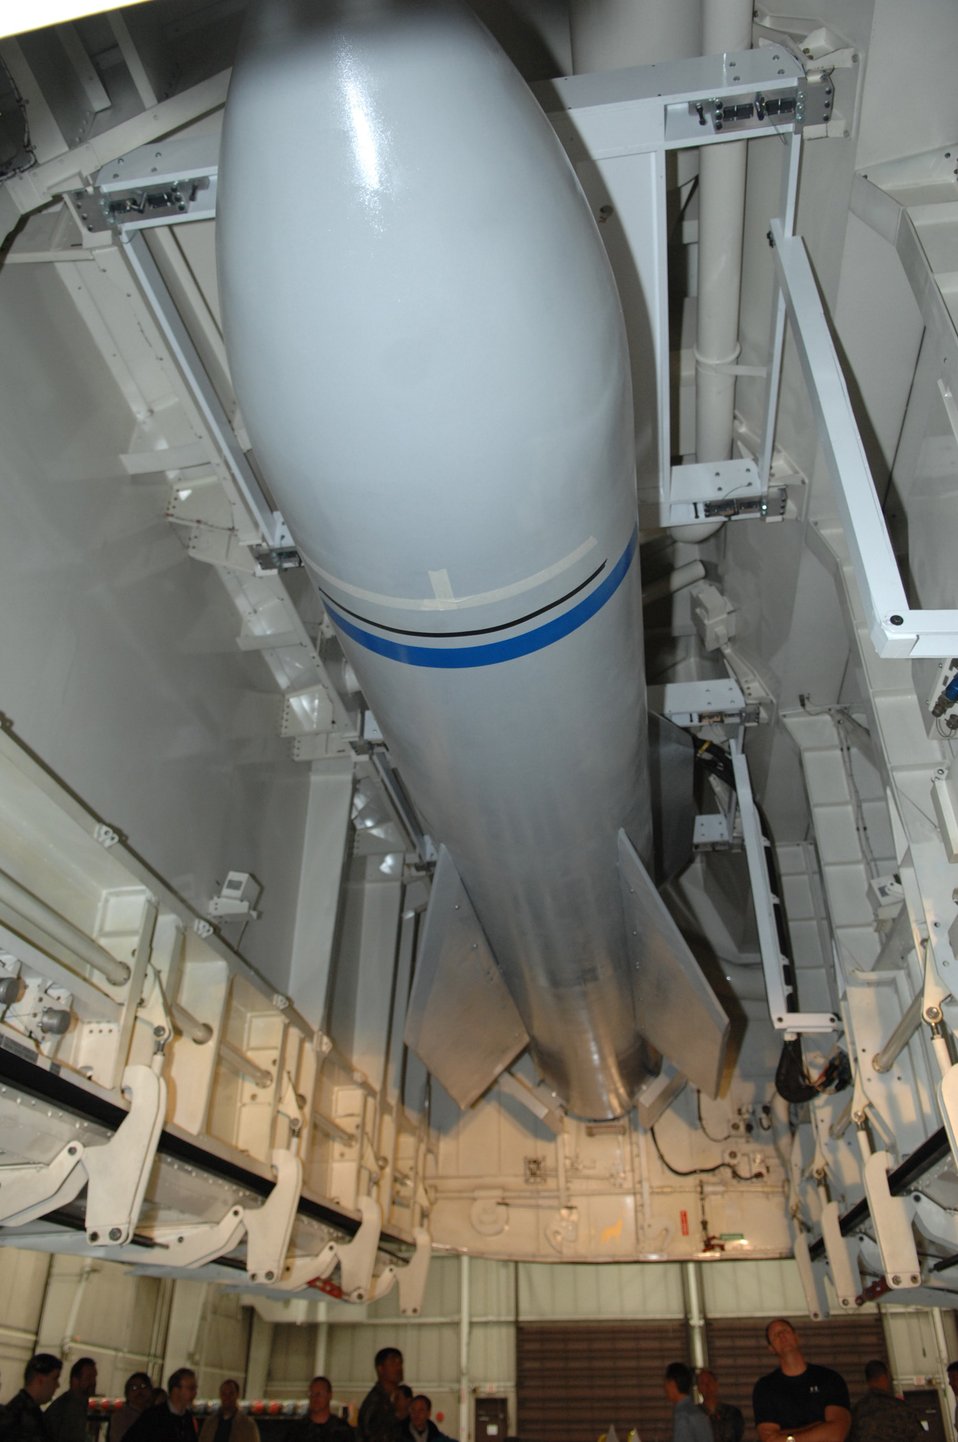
30,000-pound bomb reaches milestone

Weapon specialists look on as a mock up of the Massive Ordnance Penetrator sits in bomb bay of the B-2 weapons load trainer Dec. 18 at Whitman Air Force Base, Mo. The MOP is approximately 20.5 feet long, with a 31.5-inch diameter and a total weight of slightly less than 30,000 pounds. The weapon will carry over 5,300 pounds of explosive material and will deliver more than 10 times the explosive power of its predecessor, the BLU-109. It is designed to penetrate up to 200 feet underground before exploding.